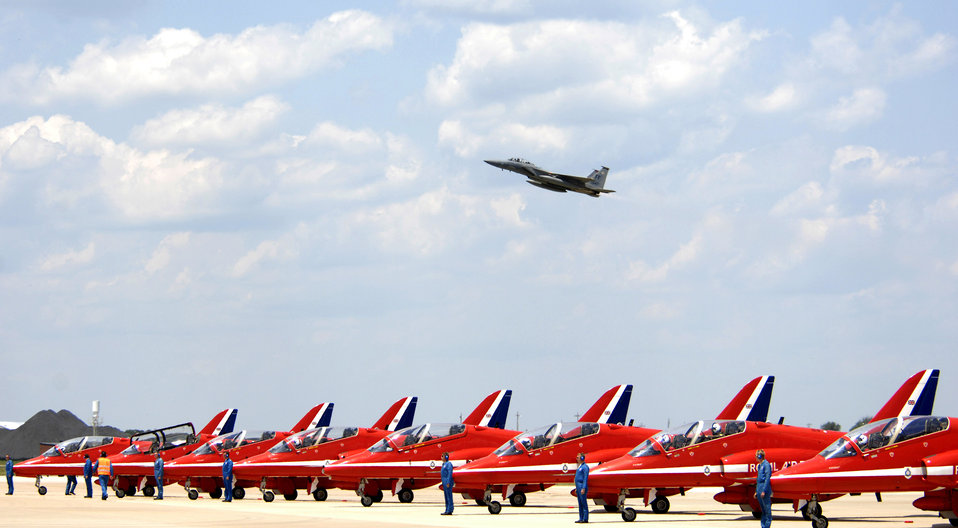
Raptor joins Red Arrows

An F-15 Eagle flies above the Royal Air Force Aerobatic Team, The Red Arrows, June 18 at Langley Air Force Base, Va. The Red Arrows will perform during AirPower over Hampton Roads, the Langley AFB airshow, which is scheduled for June 20 to 22.